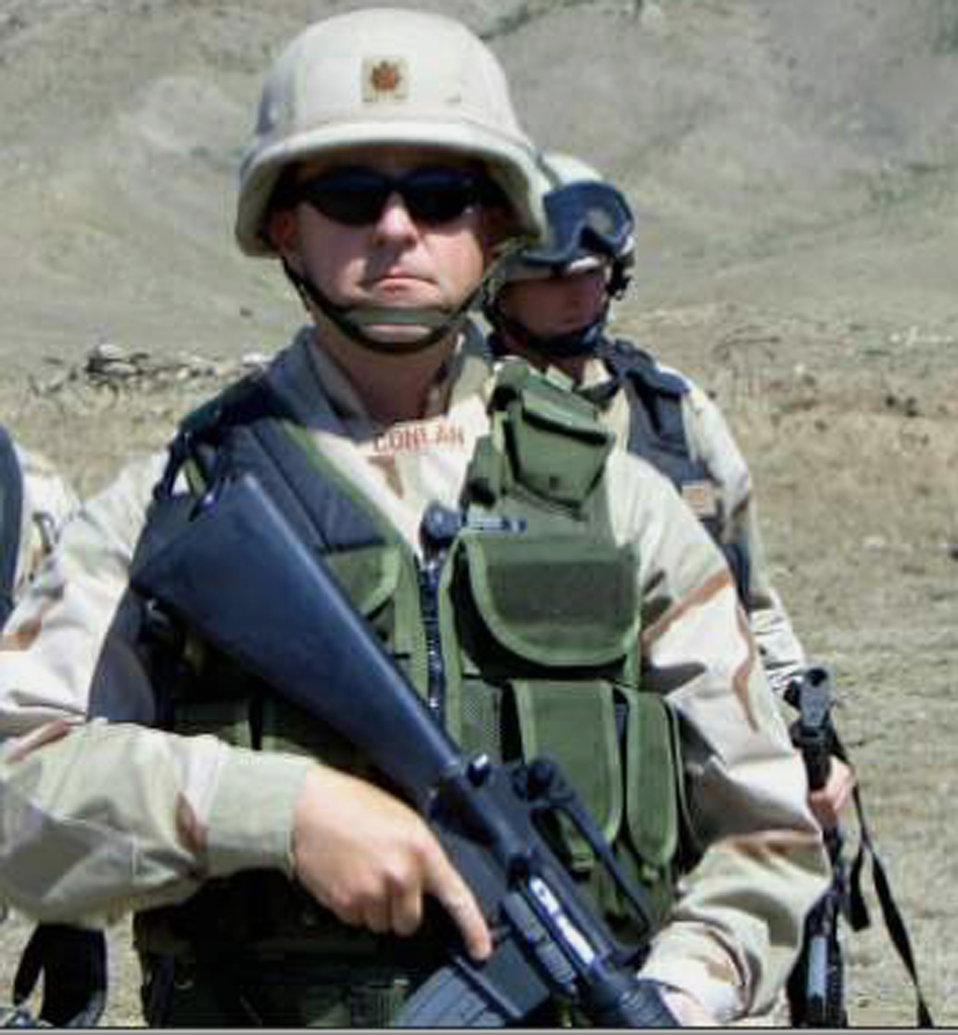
Air Force Major Fulfills Career Milestone

Maj. Matthew Conlan, who is retiring after 20 years of service, finished his career after battling back from serious wounds suffered in a 2005 mine explosion in Afghanistan.